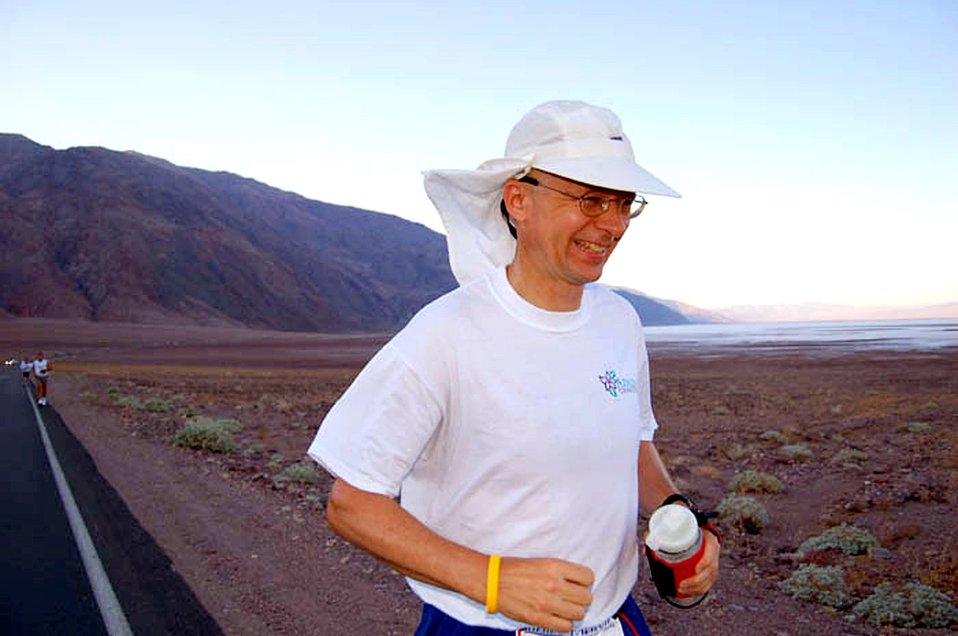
Colonel takes fitness to the extreme

DEATH VALLEY, Calif. (AFPN) -- Col. Norman Albert runs along a 153-mile marathon route from Death Valley, Calif., to Mount Whitney, Calif., during the Badwater Ultramarathon. Colonel Albert completed the course in 42 hours, 46 minutes, beating the 48-hour goal he set for himself. The ultramarathon was held July 11-13.